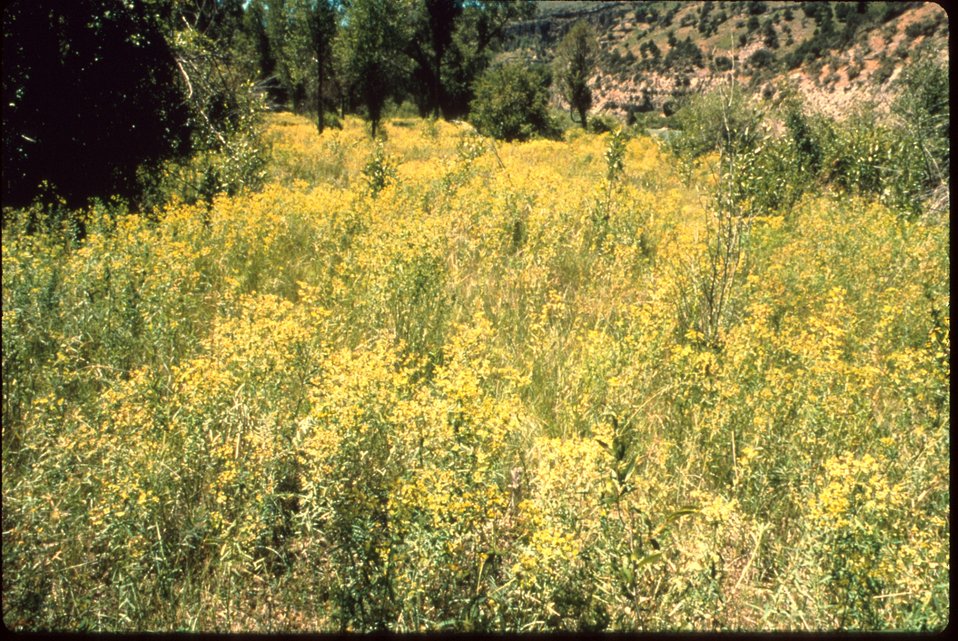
Leafy Spurge on South Fork of Snake River Idaho vegetation Plants in BLM